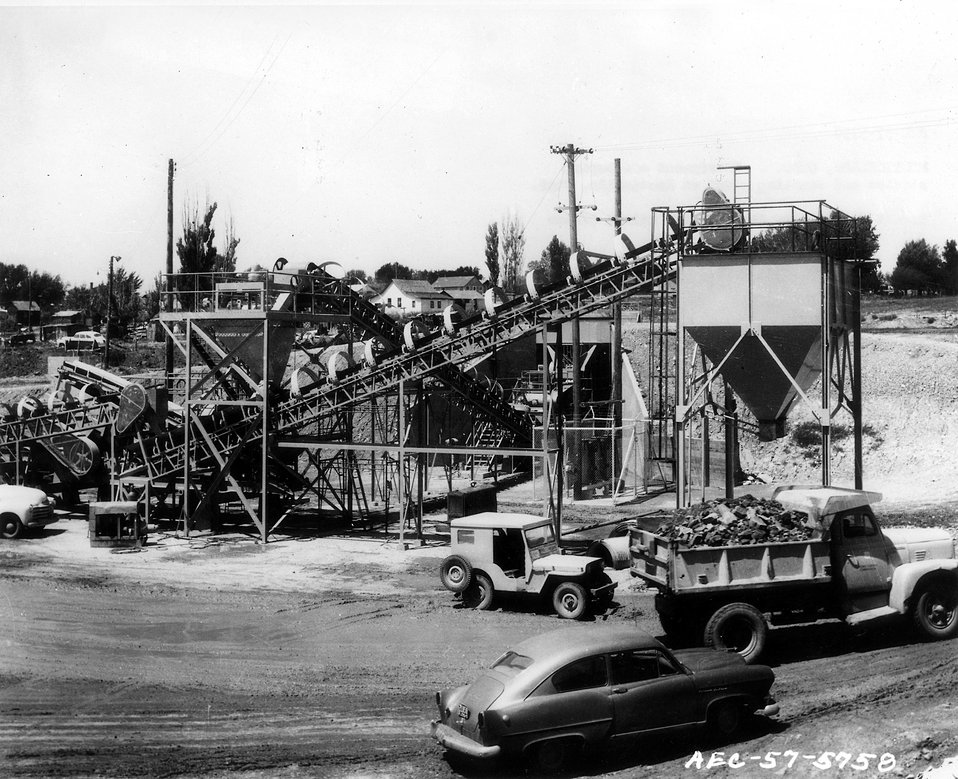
Government ore-buying station and sampling plant at Monticello, Utah. c. 1957